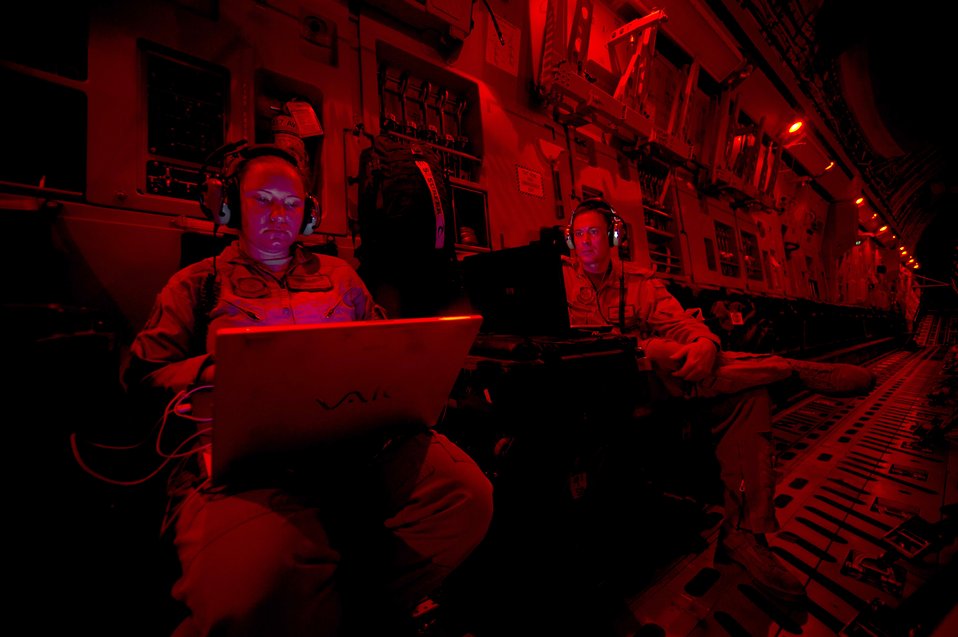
Just dropping by...

Staff Sgt. Jenna Kramer and Canadian Air Force Warrant Officer David Daly, C-17 Globemaster III loadmasters assigned to the 816th Expeditionary Airlift Squadron, update records March 5, 2011, after an air delivery mission over Afghanistan. The C-17 aircrew delivered fuel and supplies to a remote forward operating base there.